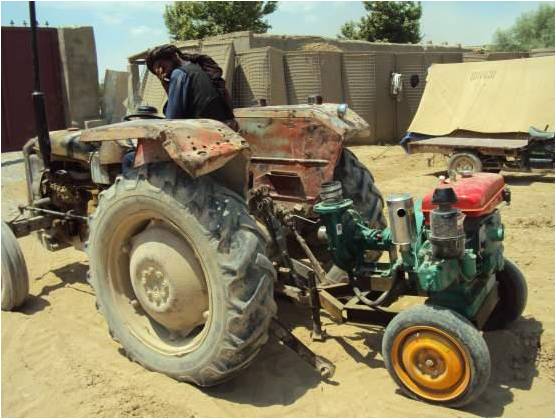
Pumps continue to trickle in Marjah